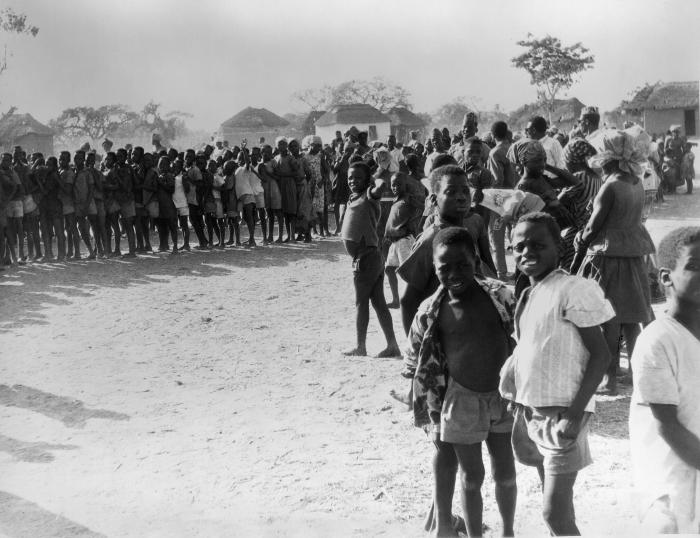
This 1969 image was captured in Niger, West Africa during the Smallpox Eradication and Measles Control Program efforts in that country, and depicts numbers of village inhabitants of all ages, waiting in a long line for their smallpox and measles vaccinations.